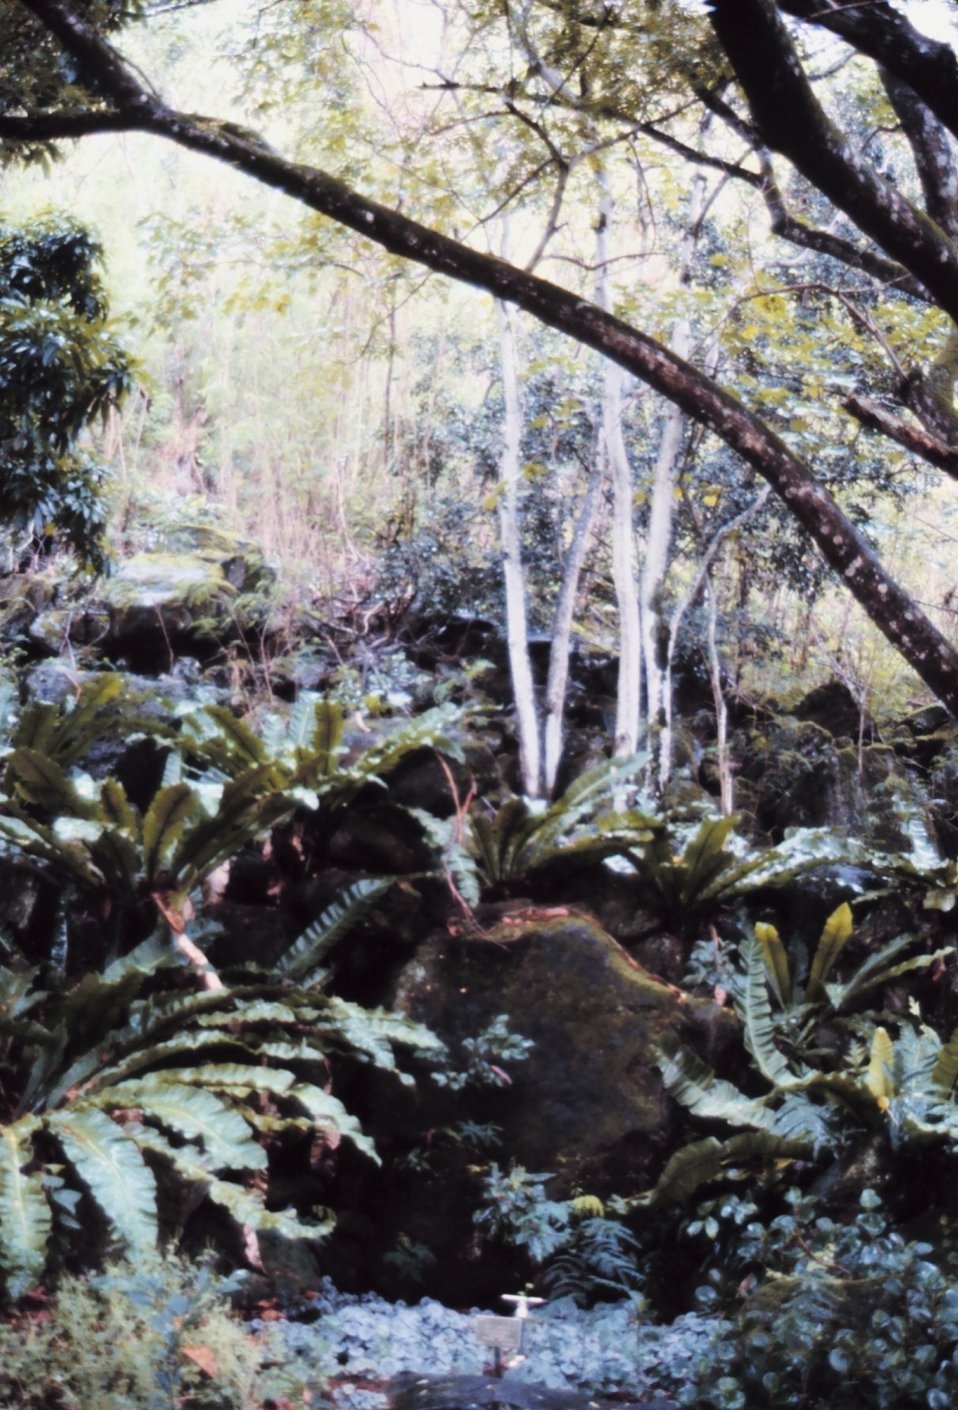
Rain forest